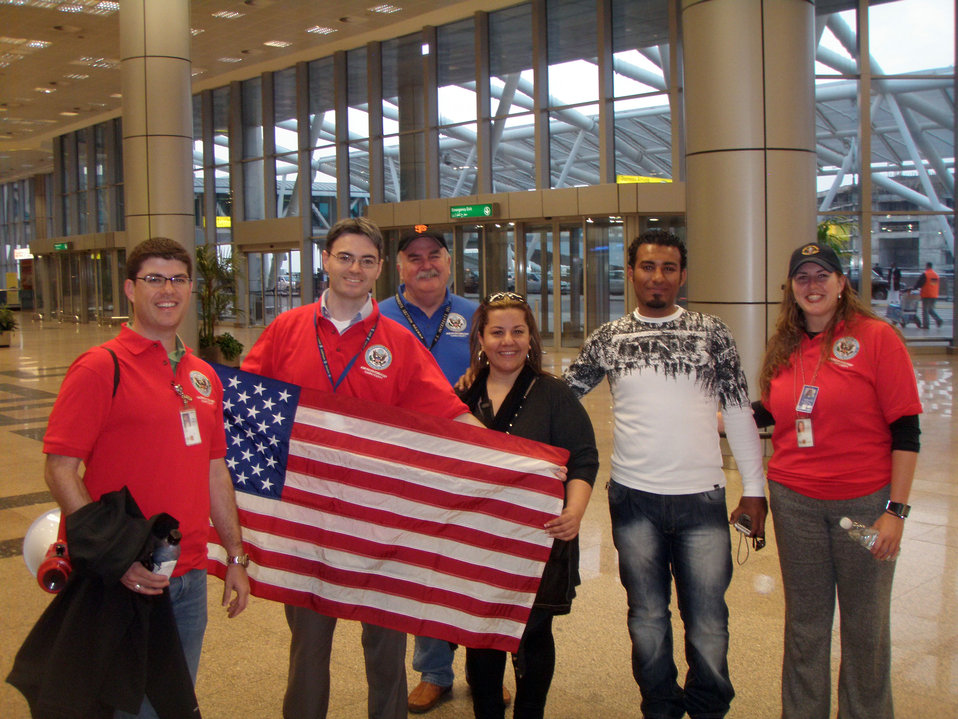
U.S. Diplomats Pose for a Photo With an American Couple

From left to right, Embassy Cairo Public Diplomacy Officer Adam Lenert, Embassy Riga Chief Consul Tim Buckley, Embassy Dhaka Chief Consul Bill Hammaker, and Embassy Cairo Consular Affairs Officer Jessica Adams, right, pose for a photo with an American couple at the Cairo International Airport in Egypt on February 7, 2011.